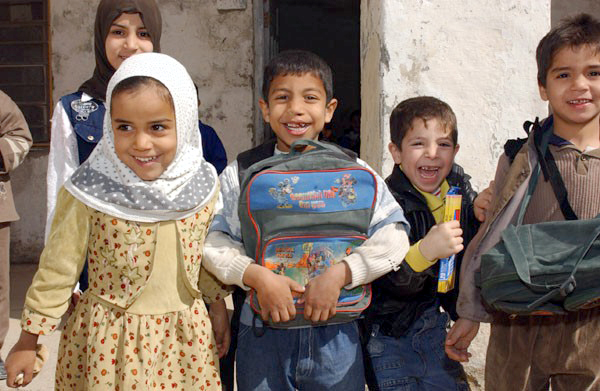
'Win the Peace' coalition delivers hope for future

NASIRIYA, Iraq -- Children from a local school select their backpacks donated by 380th Air Expeditionary Wing Airmen. More than 200 backpacks filled with school supplies and hygiene products were donated.